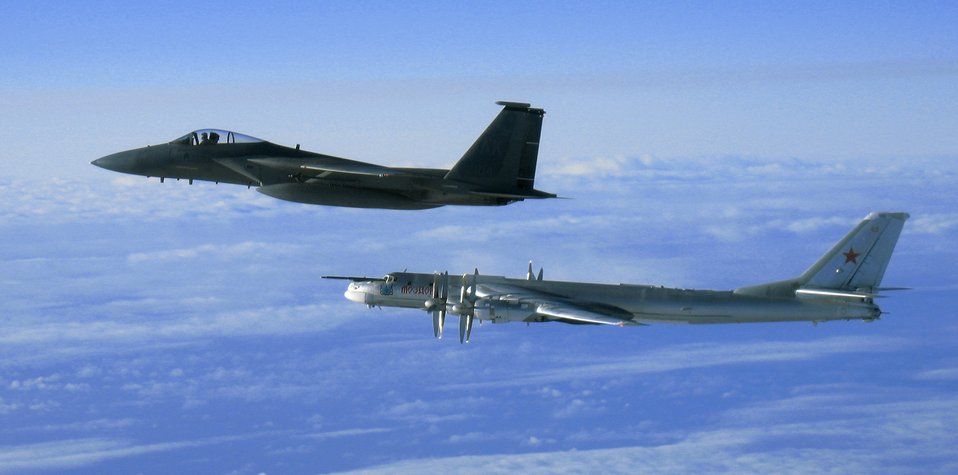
Tracking the Bear

An F-15 Eagle from the 12th Fighter Squadron at Elmendorf Air Force Base, Alaska, flies next to a Russian Tu-95 Bear Bomber Sept. 28 during a Russian exercise near the west coast of Alaska.